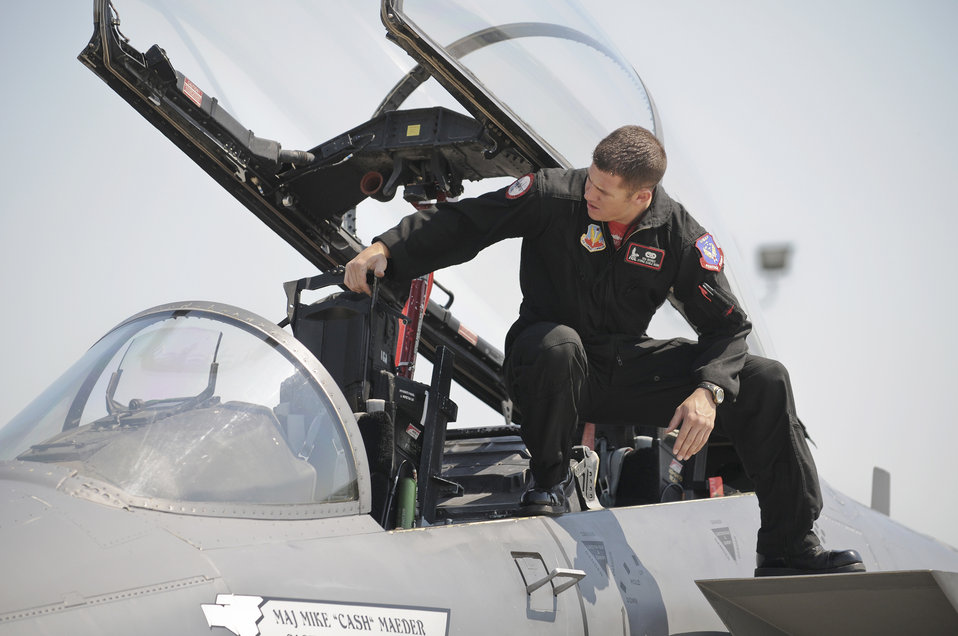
Strike Eagle, Fighting Falcon 'thunder' over Kentucky

Senior Airman Brandon Rhodes climbs into the cockpit of an F-15E Strike Eagle April 15, 2010, at the Kentucky Air National Guard Base in Louisville, Ky. Airman Rhodes, a crew chief, and the rest of the Strike Eagle Demo Team are assigned to 4th Fighter Wing out of Seymour Johnson Air Force Base, N.C.